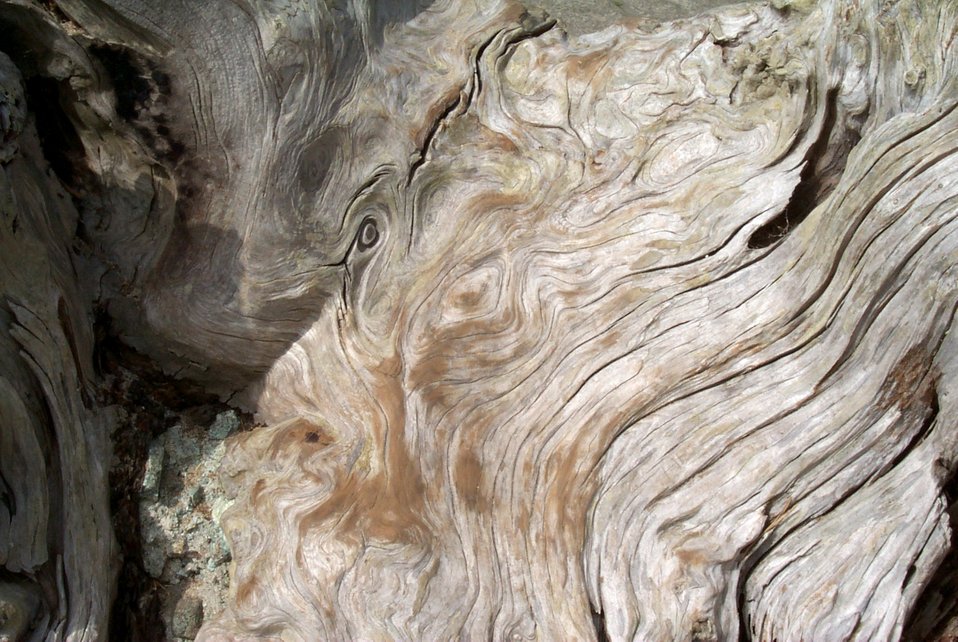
Driftwood patterns